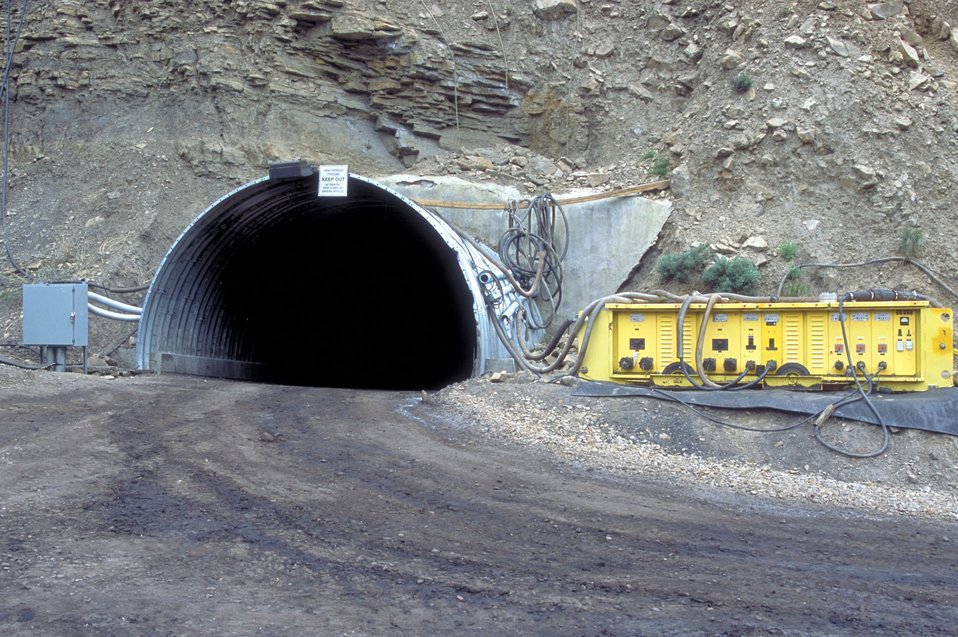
Coal production near Price, Utah.